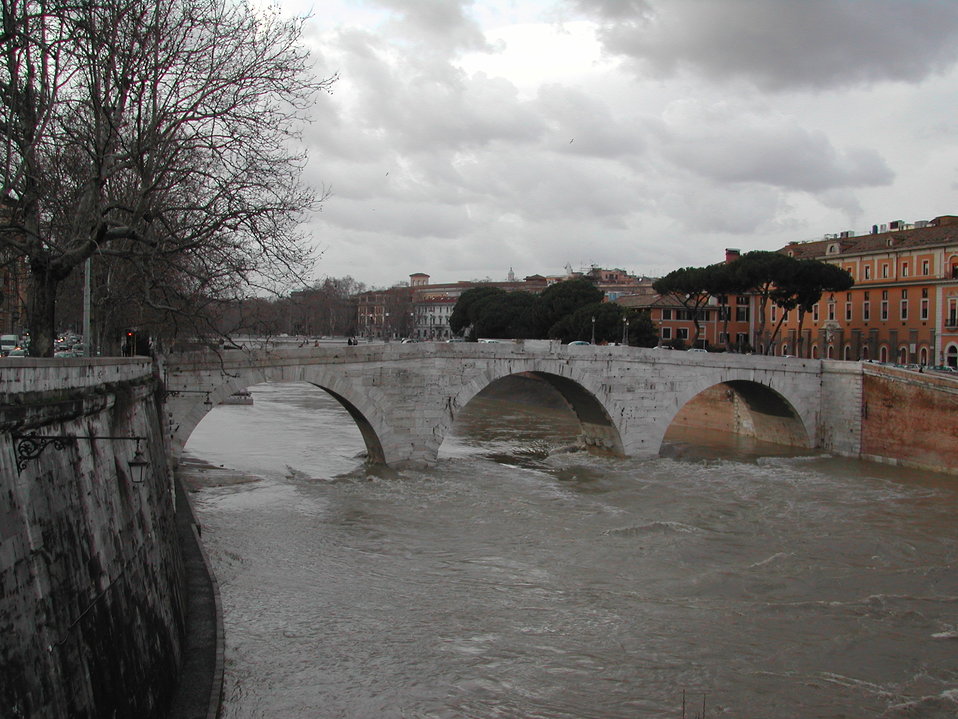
040227 tevere18PonteCestio